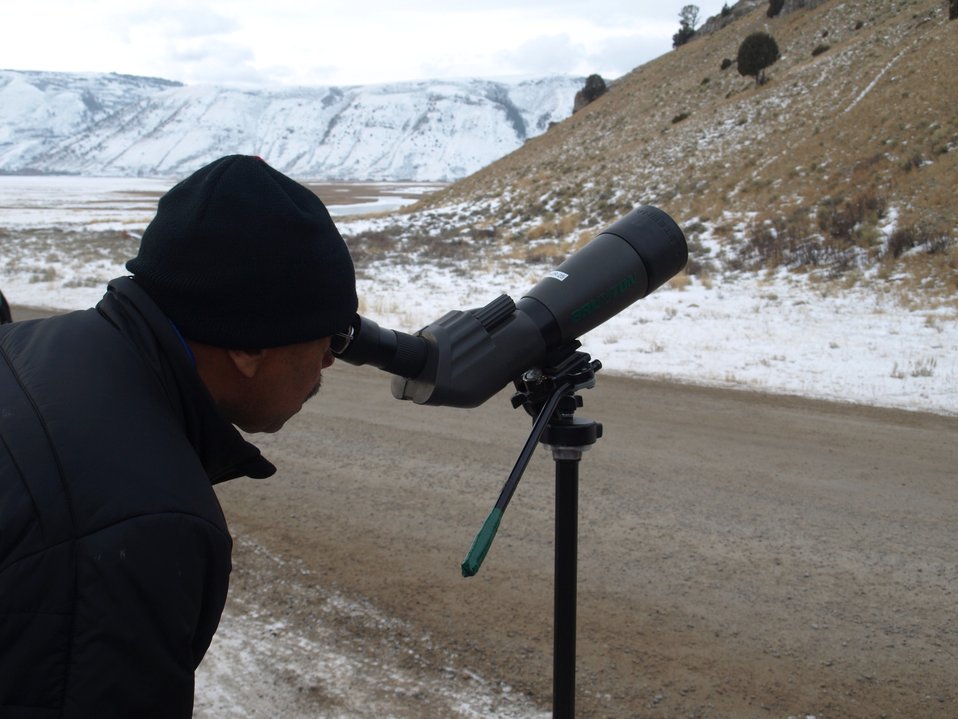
In Search of Sheep

A popular stop on the Refuge Road is alongside Miller Butte, where wintering bighorn sheep can frequently be seen. Winter naturalists provide a spotting scope and binoculars during the excursions to enhance people's wildlife viewing experience.